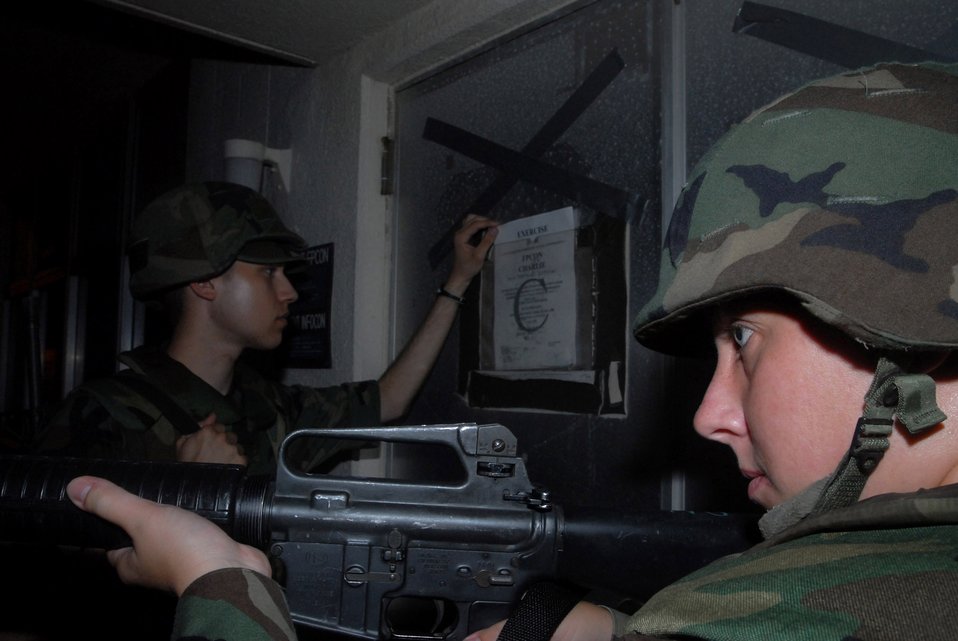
Kadena begins selective arming program

Airman 1st Class Tyler McCollom changes the force protection signs while Senior Airman Mary Osterman provides security during a base exercise Aug. 23 at Kadena Air Base, Japan. Both Airmen took the selective arming course, which enables them to protect base members and assets. The base conducted a three-day exercise to demonstrate its ability to deploy and generate aircraft. Airman McCollom is a network application technician with the 18th Communications Squadron and Airman Osterman is an airfield systems technician with the 18th CS.